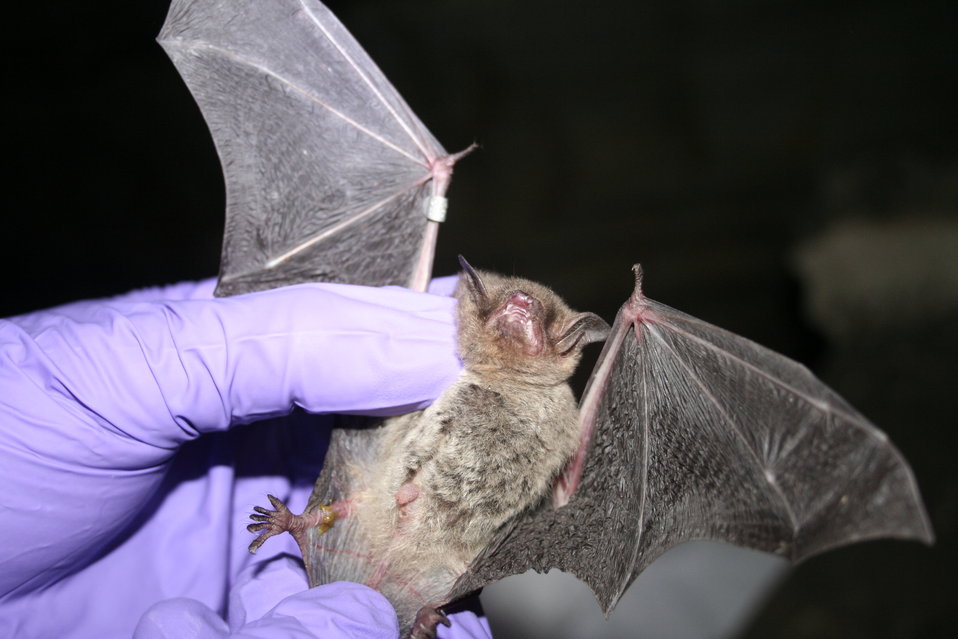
Researcher inspects gray bat for signs of WNS